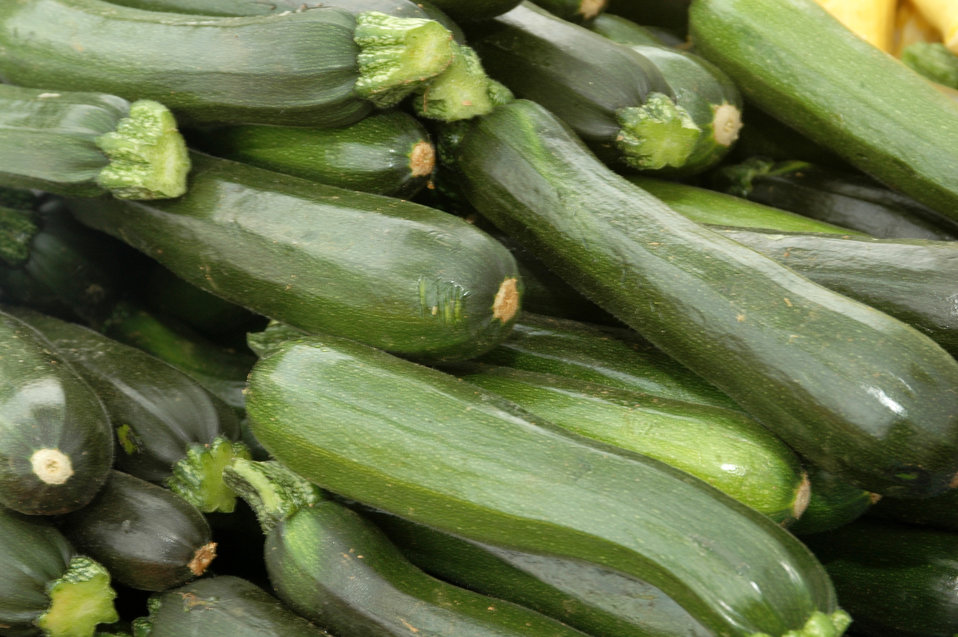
Squash for sale at the U.S. Department of Agriculture (USDA) Farmer’s Market held in the East parking lot of USDA's Whitten Building in Washington, D.C. on June 2, 2006.